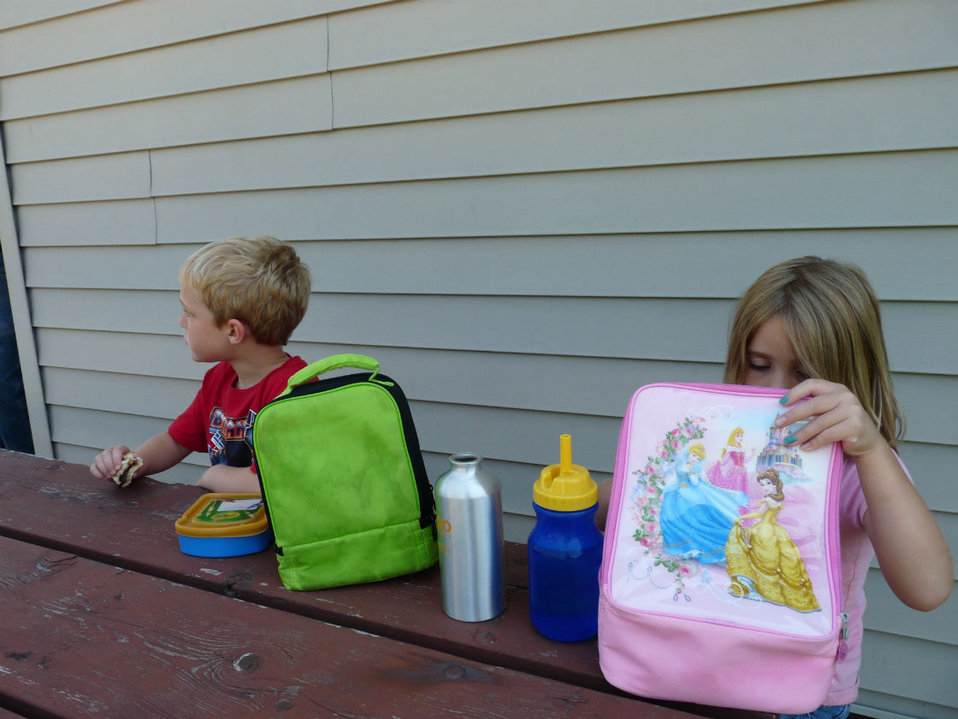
Lunchtime

Lunch time was spent in the shade as it was a very warm and sunny day.